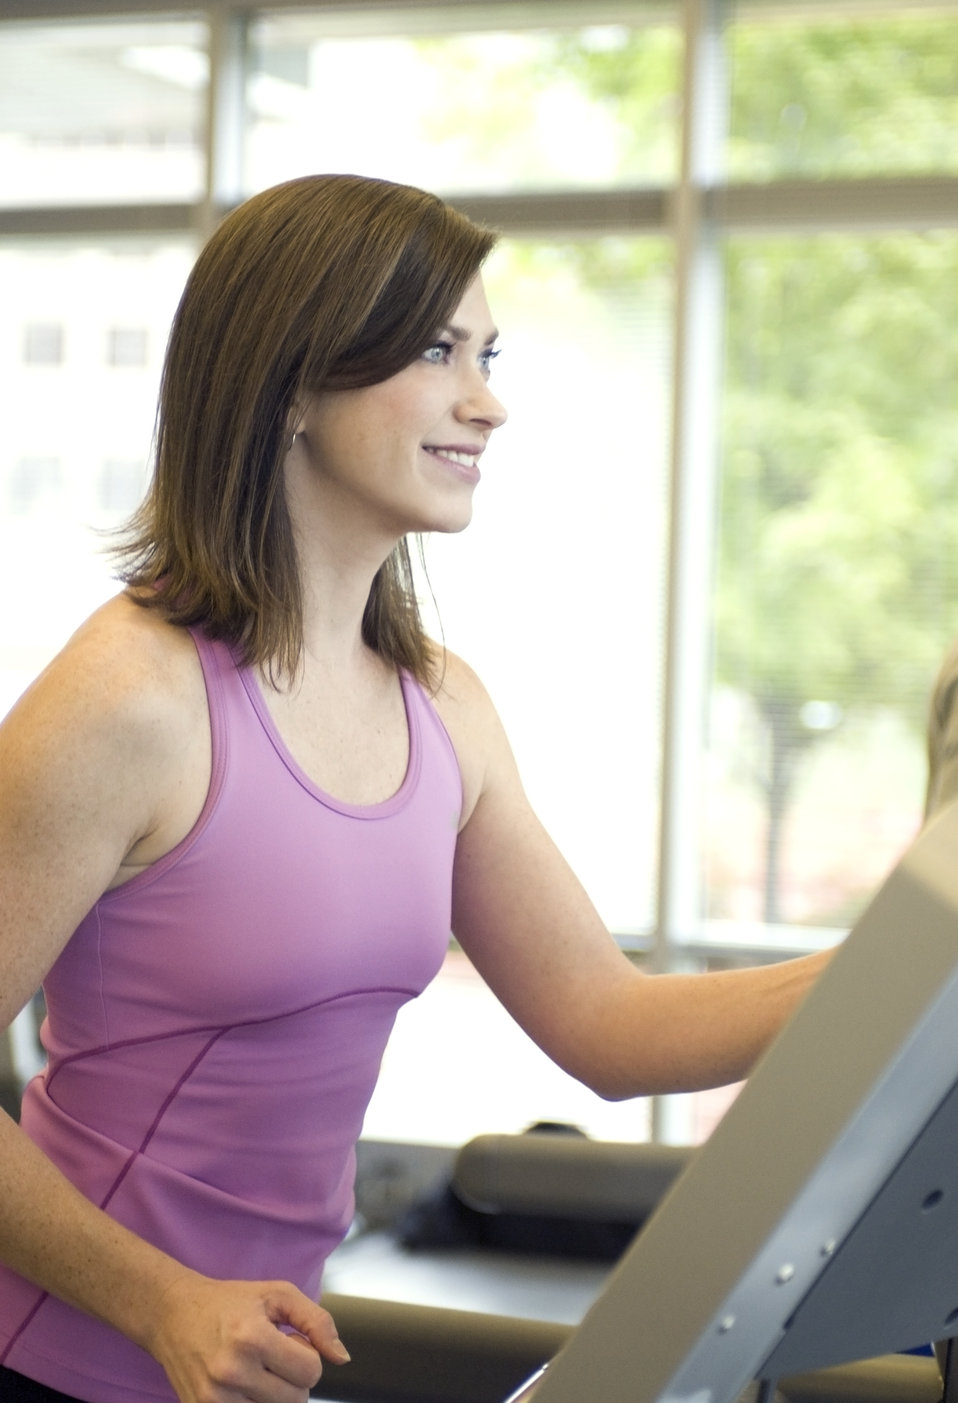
Woman on a treadmill

This image was captured on one of the Centers for Disease Control's (CDC) campuses, in the facility's fitness center, where a number of scheduled group classes are provided for employees' health and enjoyment. In this particular view, a female CDC staffer was making use of a treadmill, taking part in some aerobic exercise.